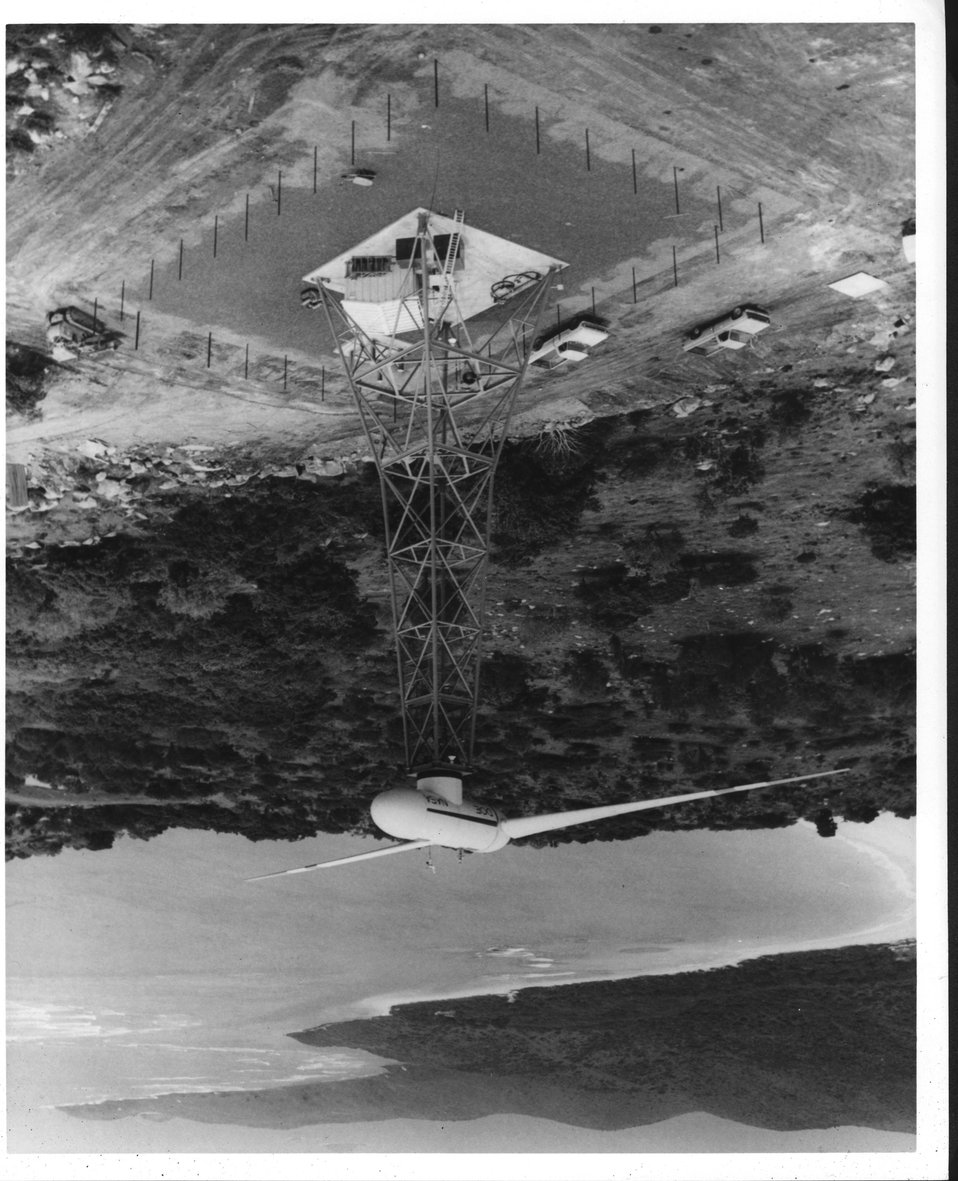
A large modern wind turbine generator is being field tested on Culebera Island, Puerto Rico for the Department of Energy and the National Aeronautics and Space Administration. c. 1978